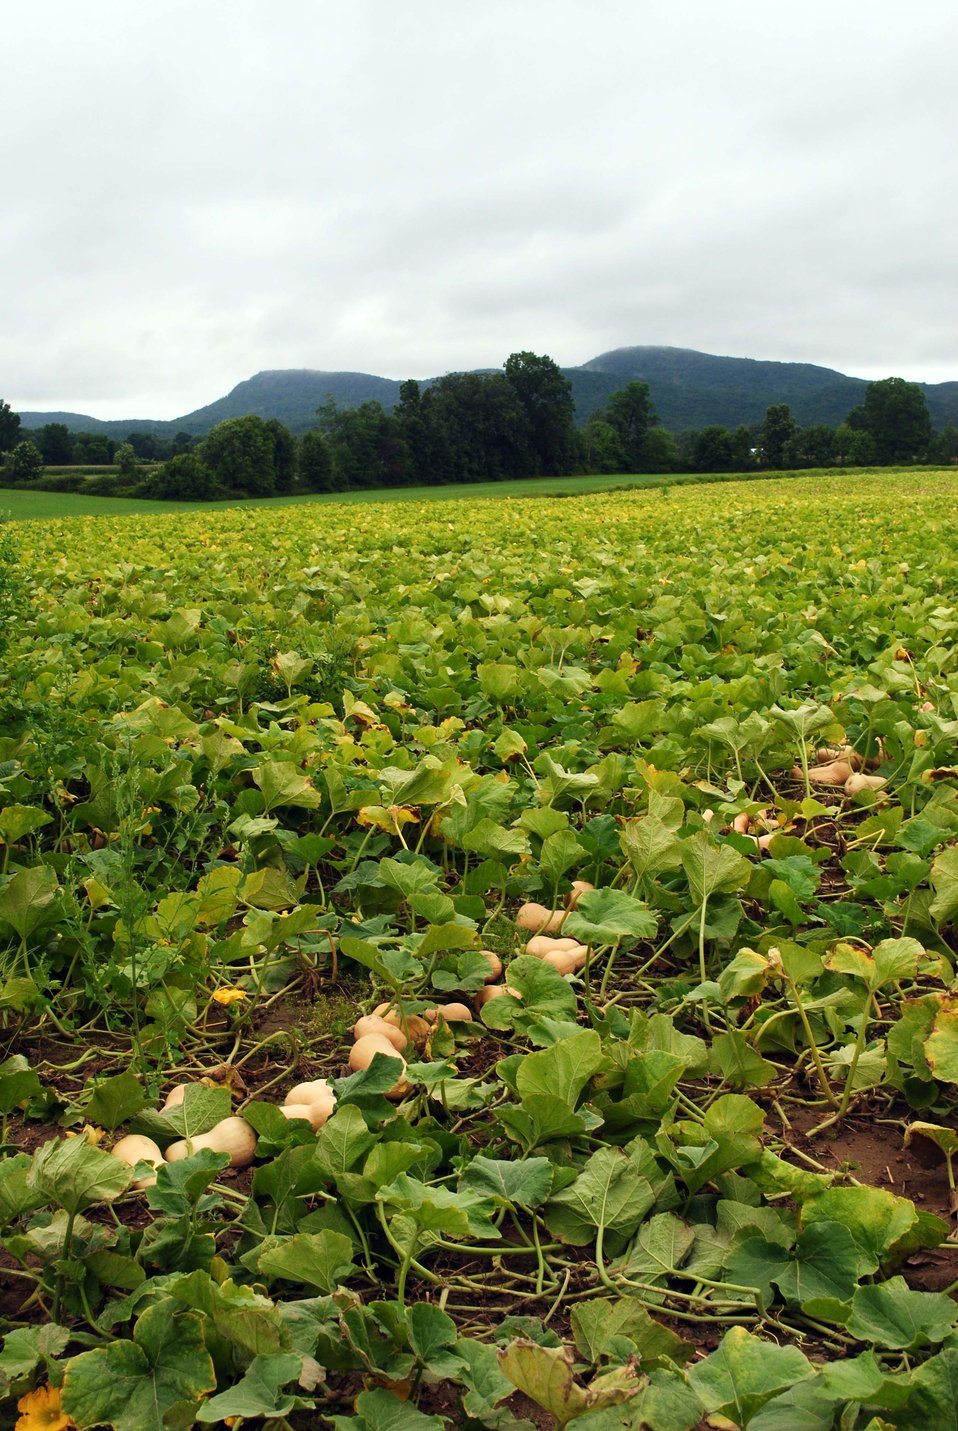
Squash Field

A field of squash with the Holyoke Range in the background. Fort River Division of the Silvio O. Conte National Wildlife Refuge, Hadley, MA.